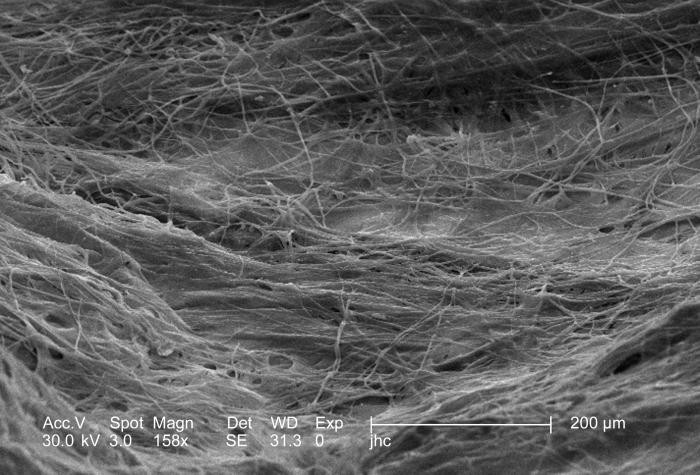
At a moderate magnification of 158x this scanning electron micrograph (SEM) depicted some of the ultrastructural details made visible of the surface of an unidentified wasps' nest found on the ground in the Decatur, Georgia suburbs. Note that the nest material takes on the appearance of woven fibers embedded in a glue-like matrix, very similar to the way in which rebar, i.e., iron textured rods, is embedding in concrete to reinforce the building material.